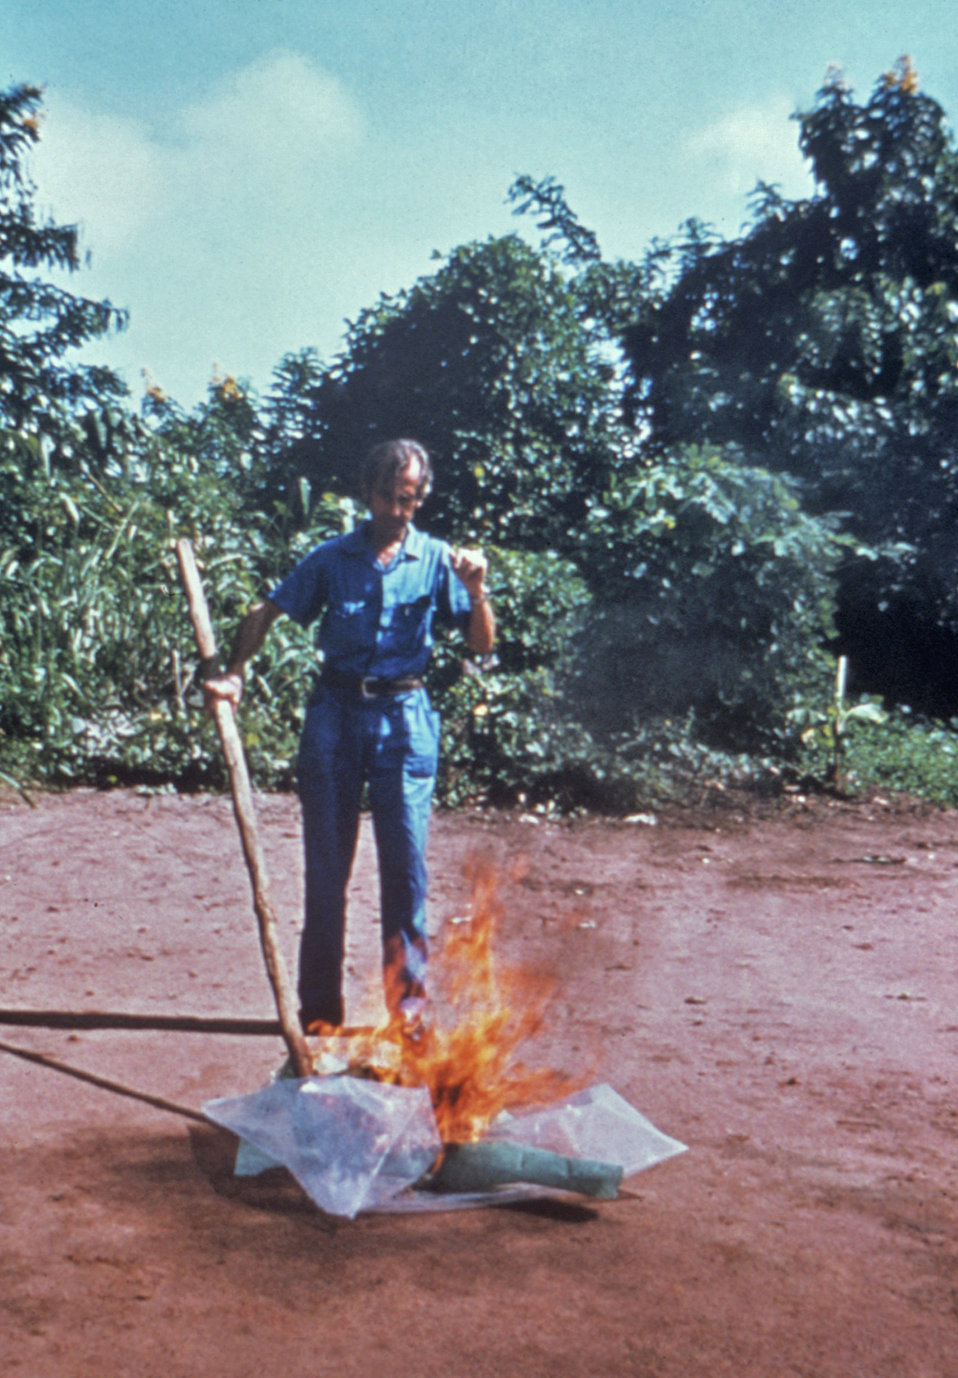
The health care worker shown here was incinerating materials used in the treatment of Ebola patients at a Yambuku hospital in 1976.